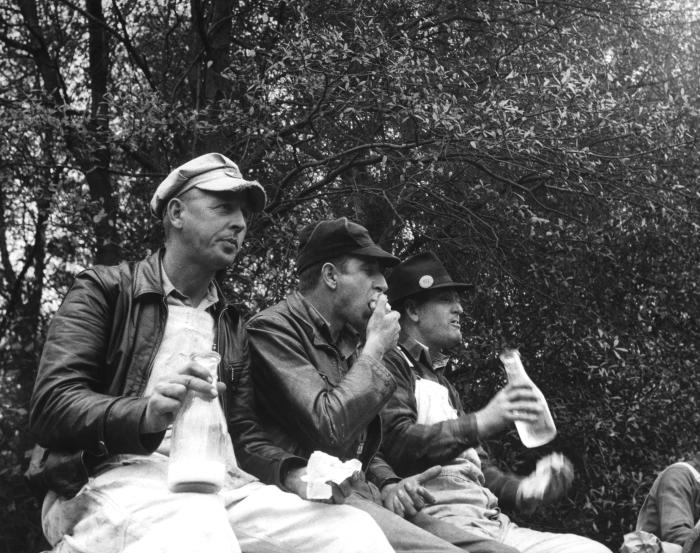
Provided by the Center for Disease Control's (CDC), National Institute for Occupational Safety and Health (NIOSH), this historic 1943 image depicted a number of male construction workers on a construction site as they were taking a work break in order to eat lunch. These workers were drinking bottled milk with their meal.